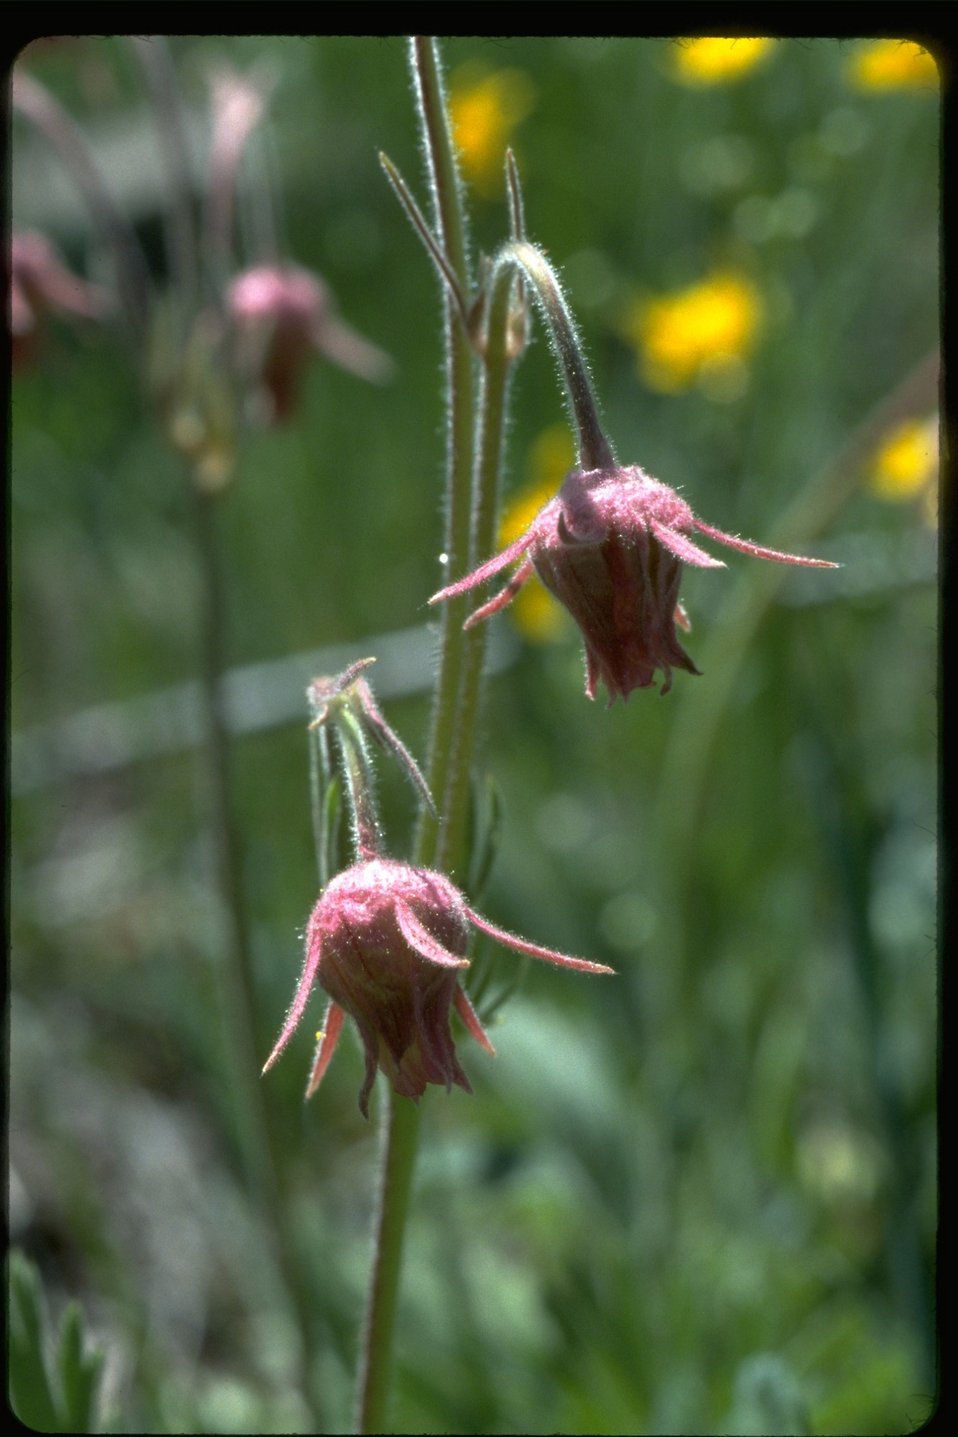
Prairie Smoke wildflowers in early stage.